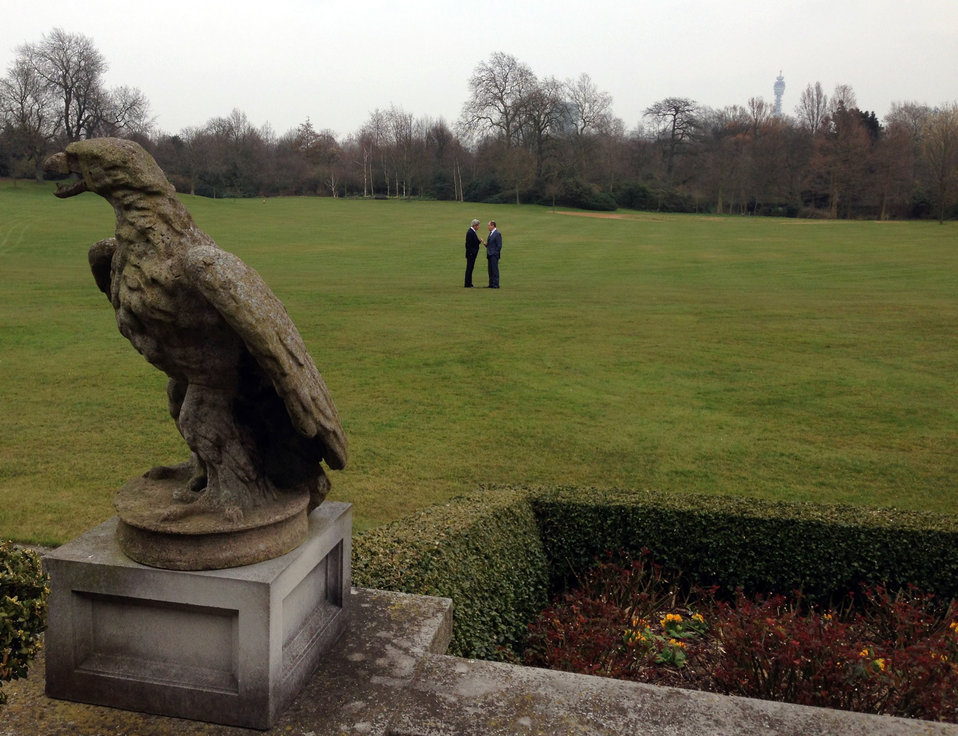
Secretary Kerry Meets With Russian Foreign Minister Lavrov

U.S. Secretary of State John Kerry meets with Russian Foreign Minister Sergey Lavrov at the Winfield House, the residence of the U.S. Ambassador, in London, United Kingdom, April 10, 2013.